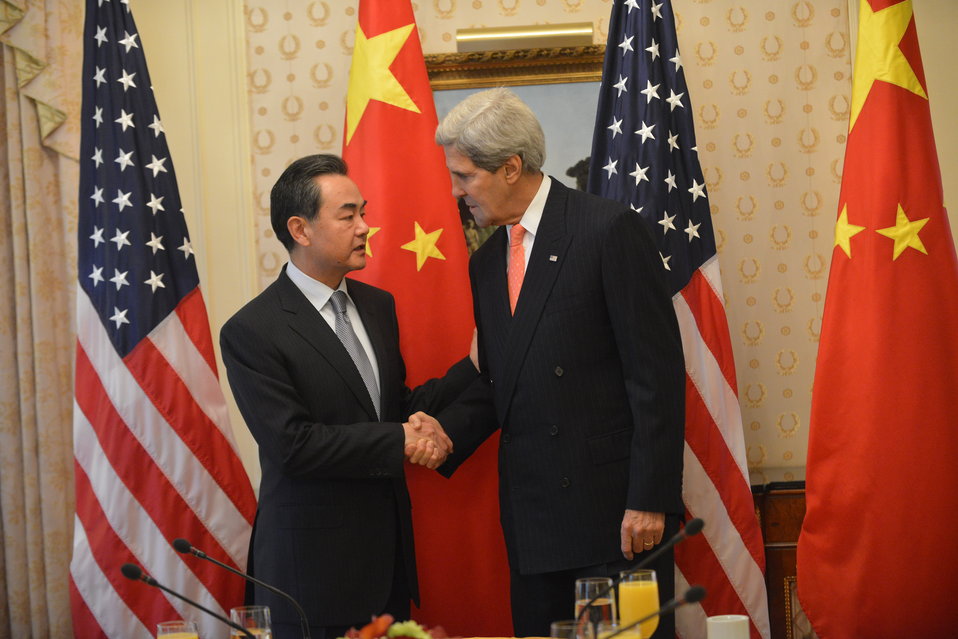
Secretary Kerry Meets With Chinese Foreign Minister Wang Yi

U.S. Secretary of State John Kerry meets with Chinese Foreign Minister Wang Yi in New York City on September 26, 2013. You can view a read out of Secretary Kerry's meeting with Chinese Foreign Minister Wang Yi here: go.usa.gov/DfAh.